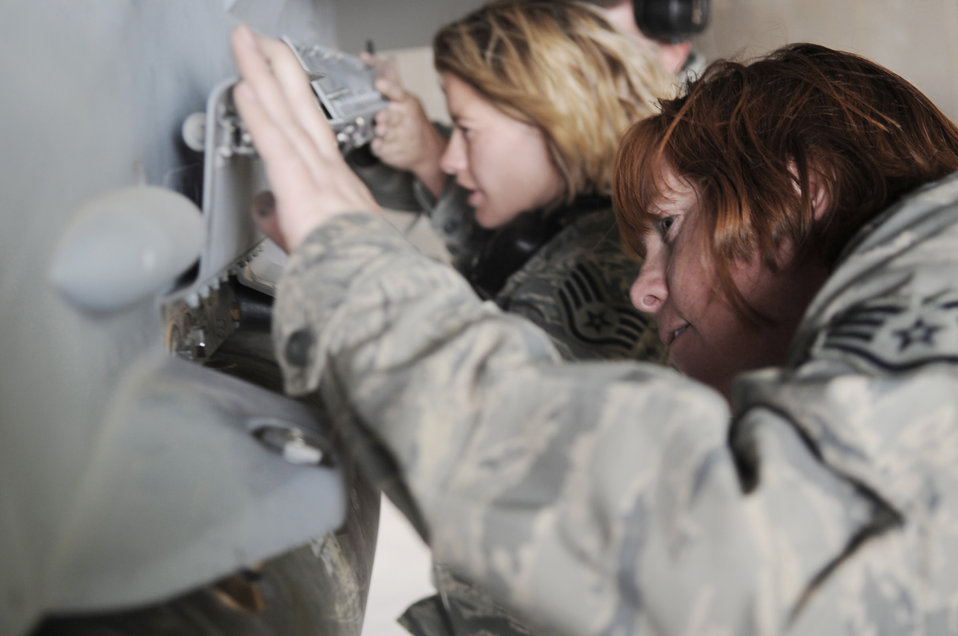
Weapons loaders arm jets for the fight

Staff Sgt. Carly Meckle (left) and Staff Sgt. Michelle Torrey check the connections after loading munitions onto an F-16 Fighting Falcon June 29 at Joint Base Balad, Iraq. Sergeants Meckle and Torrey are 332nd Expeditionary Aircraft Maintenance Squadron weapons loaders deployed from Buckley Air Force Base, Colo. Sergeant Meckle is a native of Lyons, Colo., and Sergeant Torrey is a native of Greeley, Colo.